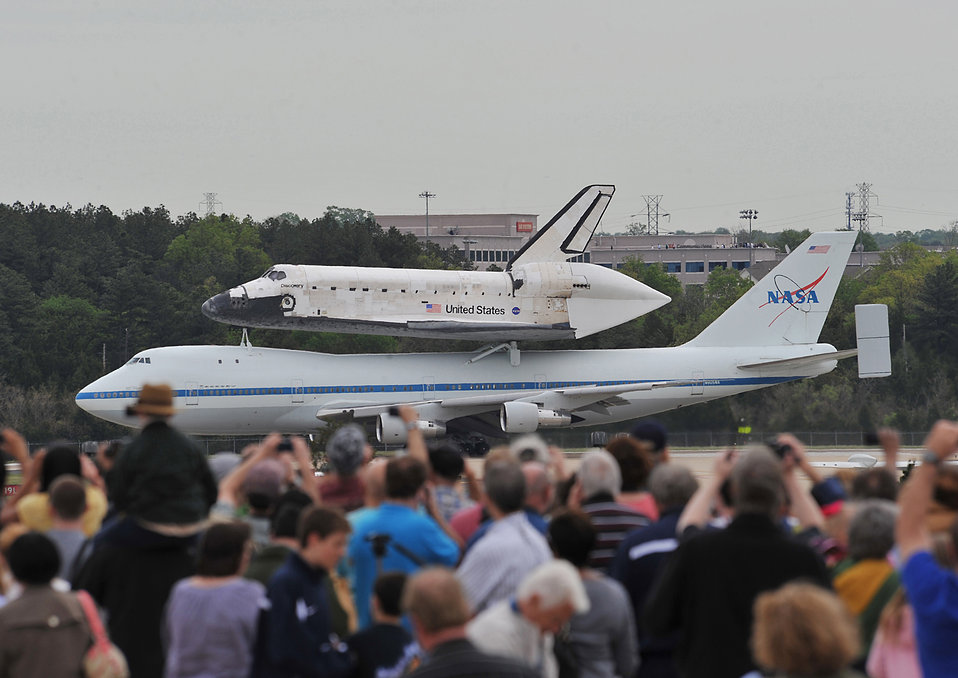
Space shuttle Discovery's last trip

A crowd watches as the space shuttle Discovery, sitting on top of a modified NASA Boeing 747 aircraft, taxis on the runway at Washington Dulles International Airport in Dulles, Va., April 17, 2012. The Discovery made its final voyage to the Smithsonian National Air and Space Museum annex in Virginia.